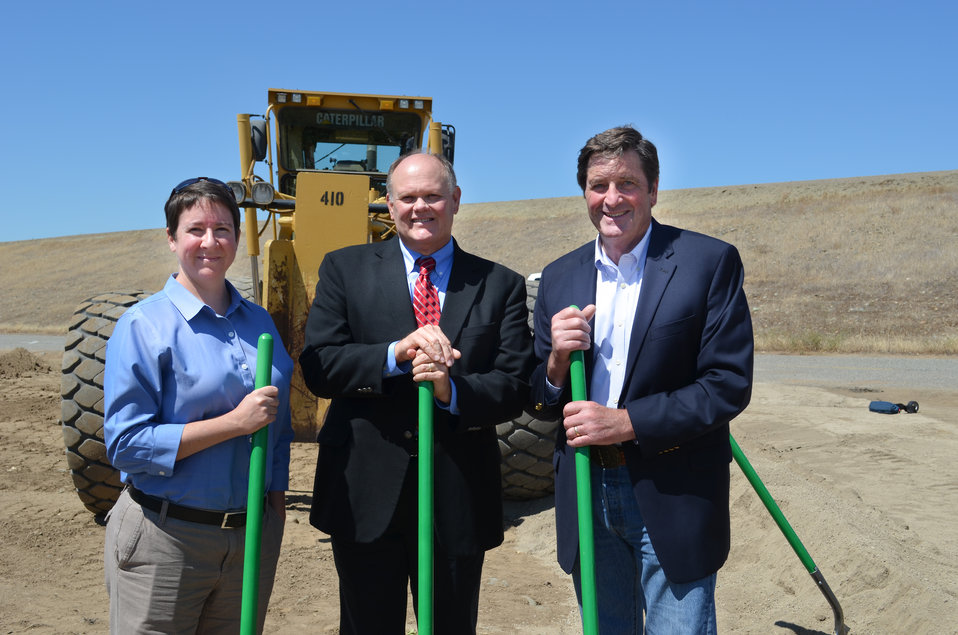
Levee improvements underway in Sutter County

Paige Caldwell (left), chief of emergency operations and Lee Bass (center), acting deputy for programs and project management for the U.S. Army Corps of Engineers Sacramento District, pose with U.S. Rep. John Garamendi and their shovels after the Aug. 7, 2013 ceremonial groundbreaking of a massive levee improvement project on the Feather River in Yuba City, Calif.